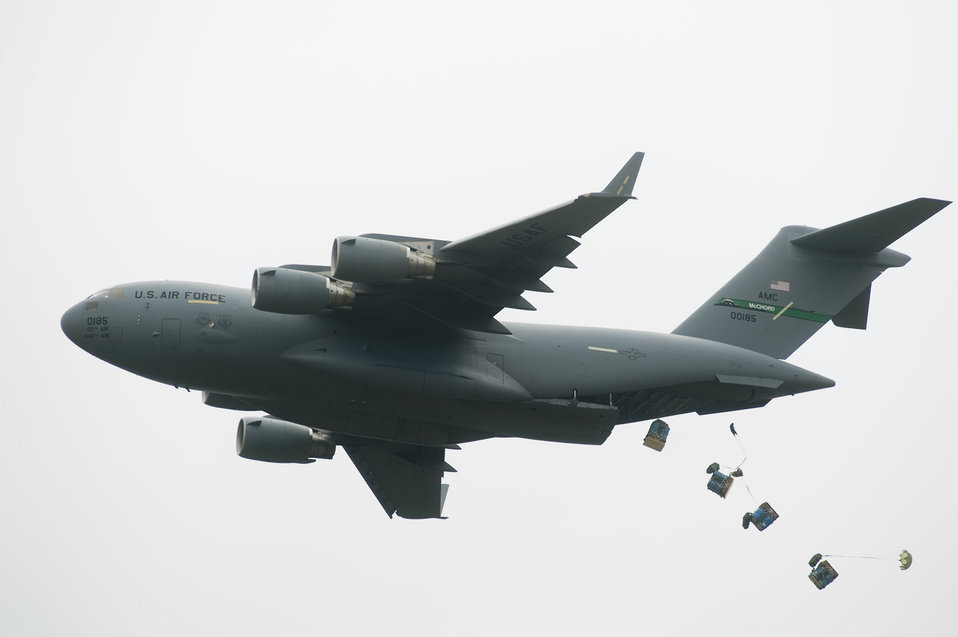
On their way down

Airdropped supplies from a C-17 Globemaster III are part of an air show demonstration July 17, 2010, during the Joint Base Lewis-McChord Air Expo 2010 at McChord Field.